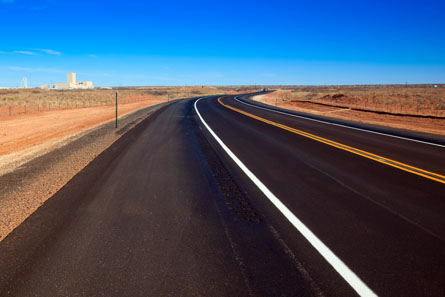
South Access Road at WIPP

The newly reconstructed Waste Isolation Pilot Plant (WIPP) South Access Road in New Mexico reopened to traffic earlier this year. The reconstruction project was funded by the Recovery Act. WIPP has requested use of the road to accommodate shipments of transuranic waste to WIPP for safe, permanent disposal. The new route would allow shipments entering New Mexico from southeast U.S. to travel a shorter distance to WIPP. For example, the route would reduce the distance shipments from the Savannah River Site in South Carolina travel by 188 miles, resulting in a saving of about $1080 per trip.